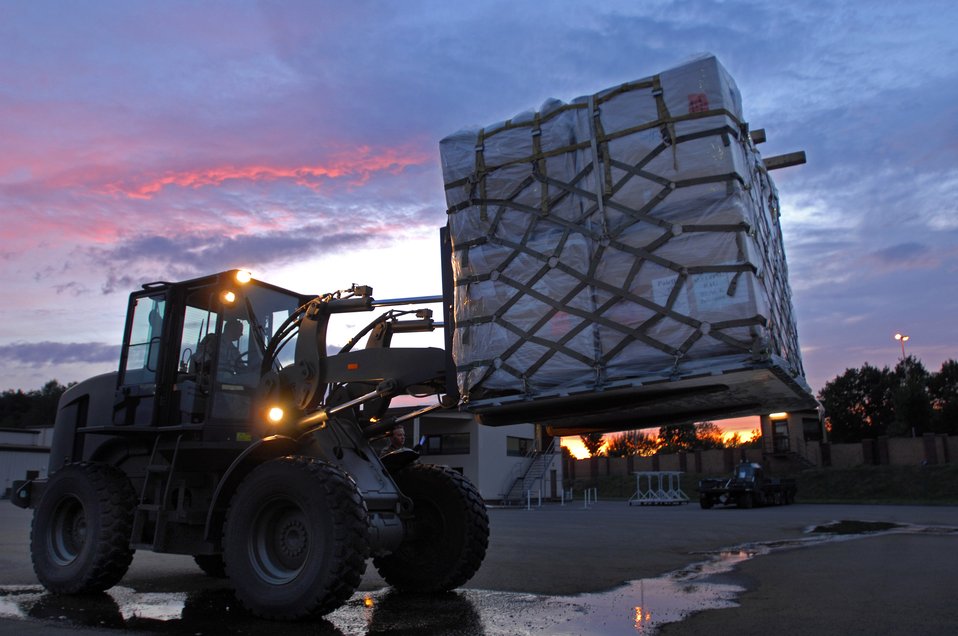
Help is on the way

Airman 1st Class Tyrell Minnis-Swass prepares humanitarian relief cargo for the Republic of Georgia Aug. 14 at Ramstein Air Base, Germany. The cargo consisted of medical supplies, blankets, pillows and other care items.